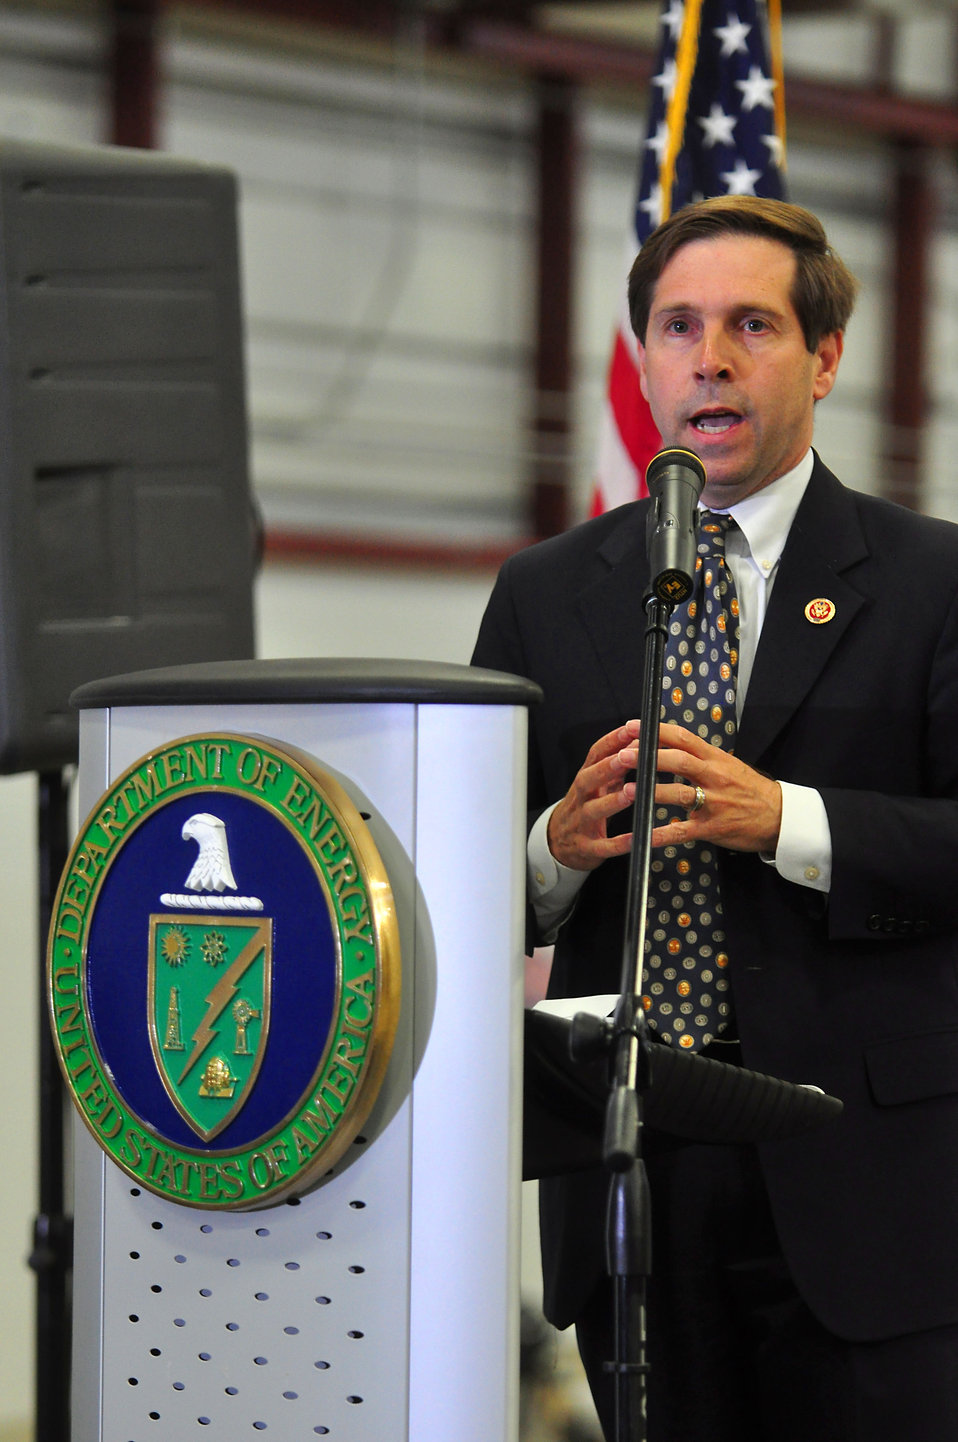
Carbon Fiber Technology Facilty Open House Oak Ridge Tennessee

13-025 DOE photo Lynn Freeny
Tennessee Congressman Chuck Fleischmann